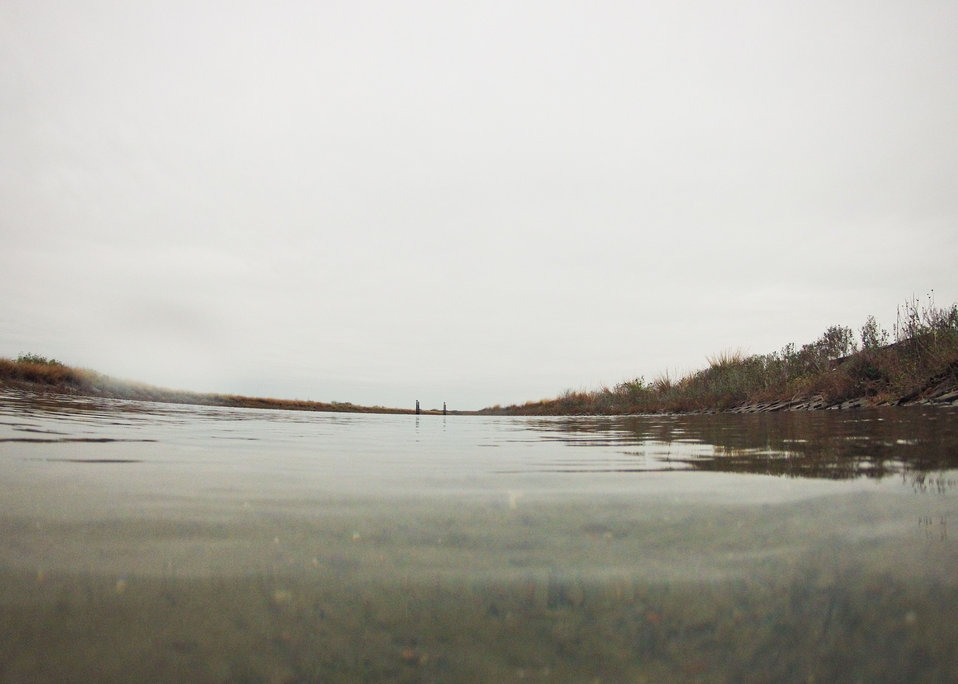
Pelicans rest on pilings looking for fish near the surface of San Antonio Bay (below), at the Aransas National Wildlife Refuge in Austwell, TX, on Friday, December 16, 2011. Typical of a coastal prairie shoreline, Phragmites reed grass stabilizes the shore.
State Conservationist Salvador Salinas commented on the USDA-NRCS Gulf of Mexico Initiative (GoMI) during a press conference, about improving water quality, habitat, and the health of the Gulf ecosystem. “Launching this initiative is a top priority for NRCS in Texas because the Gulf of Mexico is one of our state’s premier natural resources. It provides vital habitat for wildlife, and creates jobs in industries that depend upon them. The health of this resource is essential to Texas as well as to the nation,” said Salvador Salinas. The Texas initiative focuses on three watersheds in Refugio, Calhoun, Victoria and Aransas counties and ultimately the Gulf of Mexico.
“What is really compelling about GoMI and other similar conservation efforts is that they prove that Texas farmers and ranchers not only feed and clothe us and power our vehicles, but they can also help protect and restore our rivers and provide more habitat for wildlife,” stated Salinas. “That’s why it is important that this conservation project is not about taking productive farm land out of production. This is a working lands initiative, so that not only are we helping to restore the health of the Gulf, but we’re also helping to sustain and enhance the productivity of the Gulf’s farms and ranches.”
Nationally, USDA-NRCS is dedicating up to $50 million over three years to this effort.
NRCS will continue to provide proven technical expertise and that of their partners. The anticipated result is improved water quality, stream flows and wildlife habitat.